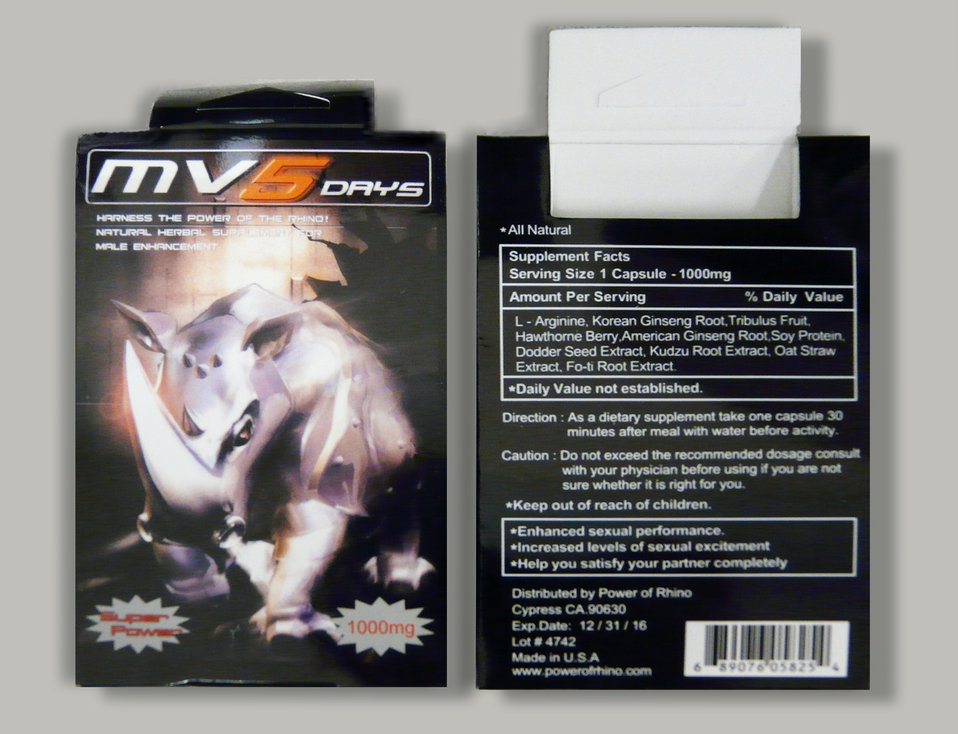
MV 5 Days

May 16, 2014 - The FDA is advising consumers not to purchase or use MV 5 Days, a product promoted and sold for sexual enhancement. The product was found to contain undeclared sildenafil. For more information, go to www.fda.gov/Drugs/ResourcesForYou/Consumers/BuyingUsingMe...

And read this Consumer Update: Beware of Fraudulent ‘Dietary Supplements’